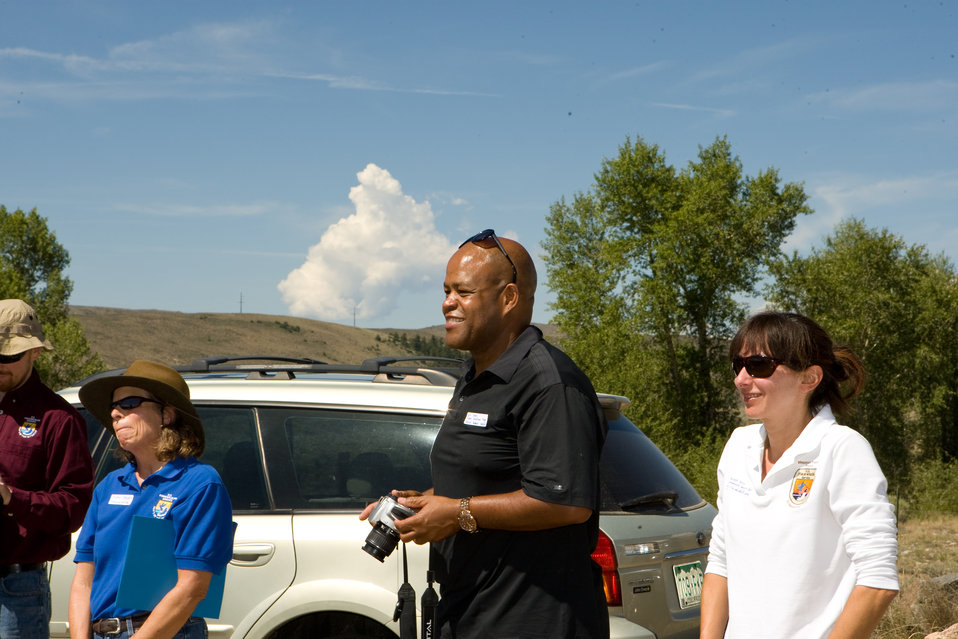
Colorado Rare Plant Conservation Initiative

The Colorado Rare Plant Conservation Initiative (RPCI) is a partnership of 23 statewide and regional agencies, private organizations, and academic institutions working to conserve 121 rare plants in Colorado. As part of these efforts the group developed the Colorado Rare Plant Conservation Strategy, developed Best Management Practices to reduce energy development impacts, addressed climate change, and developed focused strategies for the conservation of individual species at eight priority landscapes. The group has also worked to coordinate volunteer efforts for plant conservation across the state.